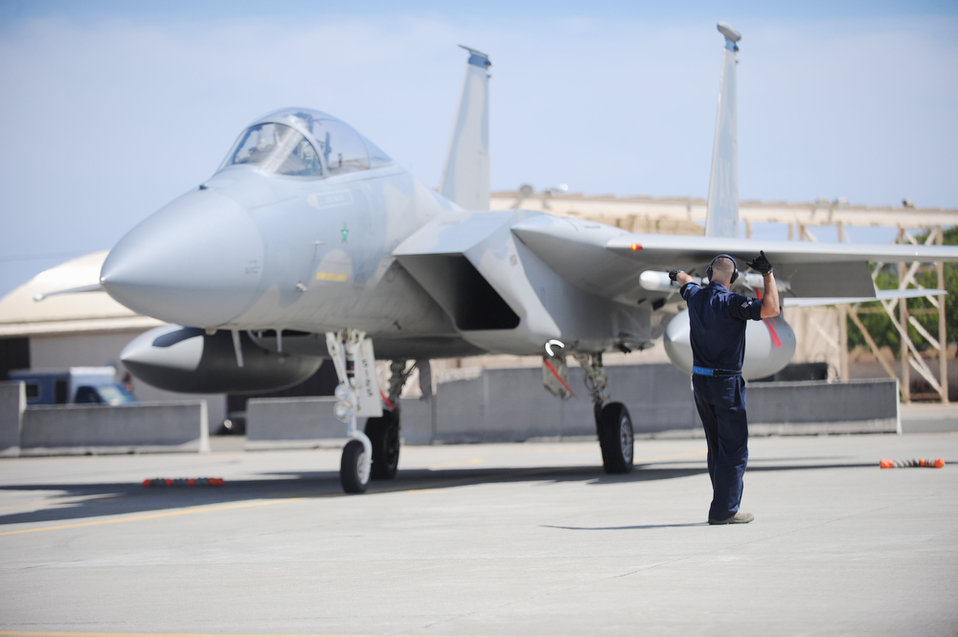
Airmen complete month-long training in 2 continents

Senior Airman Dallion Griffin signals to a 19th Fighter Squadron pilot that pre-checks are complete and that he can taxi out to the runway for takeoff to participate in a training exercise March 23, 2010 at Joint Base Pearl Harbor-Hickam, Hawaii. Airman Griffin is an F-15 Eagle crew chief with the 19th Aircraft Maintenance Unit, 3rd Maintenance Squadron at Elmendorf Air Force Base, Alaska.